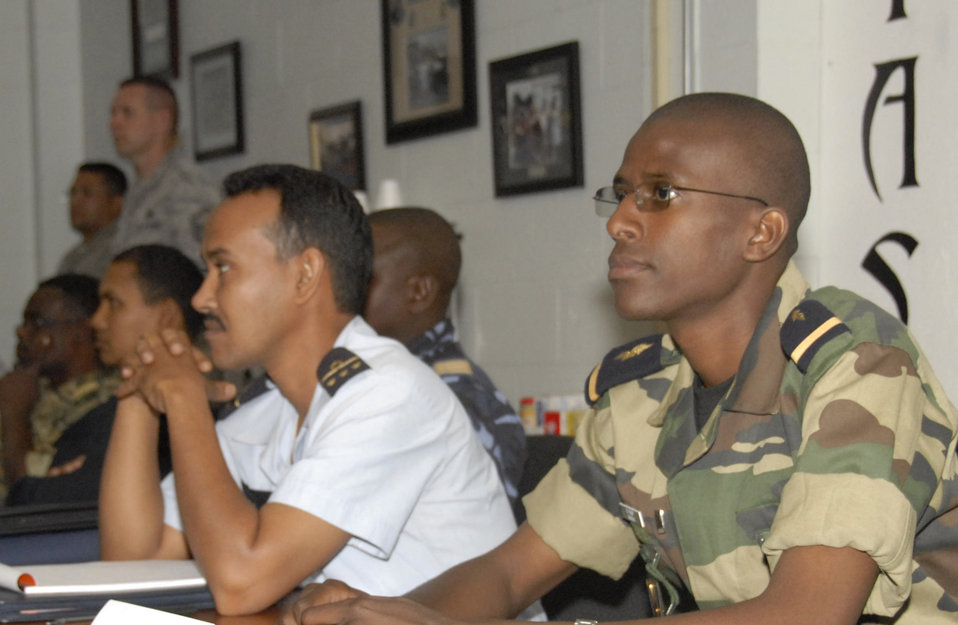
AETC, 17th AF officials bring maintenance training to 7 partner nations

Lieutenant Lassana Diop (right) and Capt. Neid Ould Nebghough(left) learn fundamental maintenance and logistics management skills May 5, 2011, at Sheppard Air Force Base, Texas. The three-week course provides core elements, such as aircraft and vehicle maintenance, logistics and safety. The course is a partnership course between the 17th Air Force (Air Forces Africa) and Air Education and Training Command and includes students from Chad, Mali, Mauritania, Morocco, Nigeria, Senegal and Tunisia. Lieutenant Diop is from Senegal and Captain Neid is from Mauritania, and both are students in the Trans-Sahara Culture of Maintenance and Logistics Course.